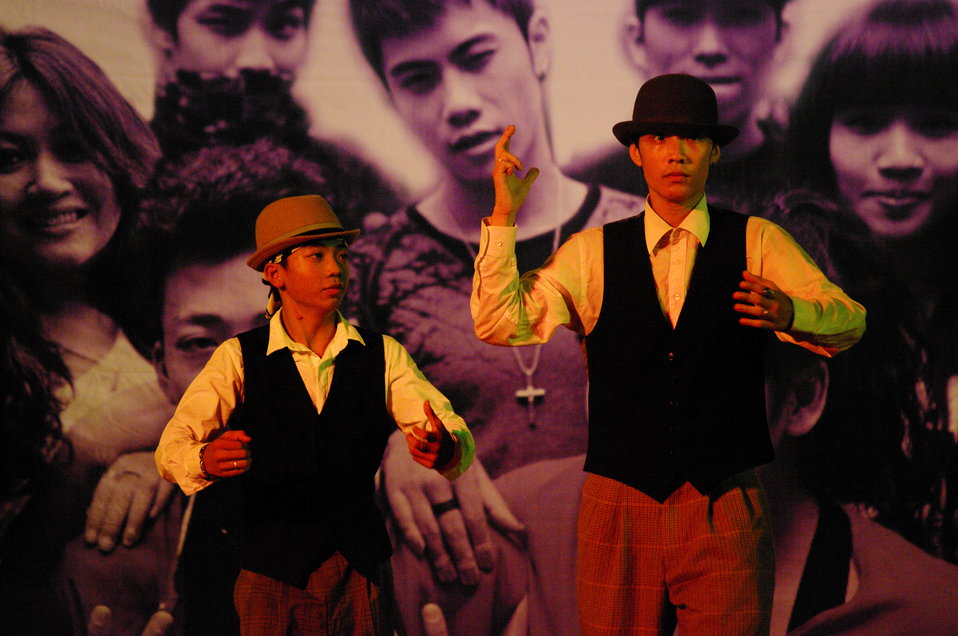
PEPFAR Sponsors Hip Hop to Stop the Spread of HIV